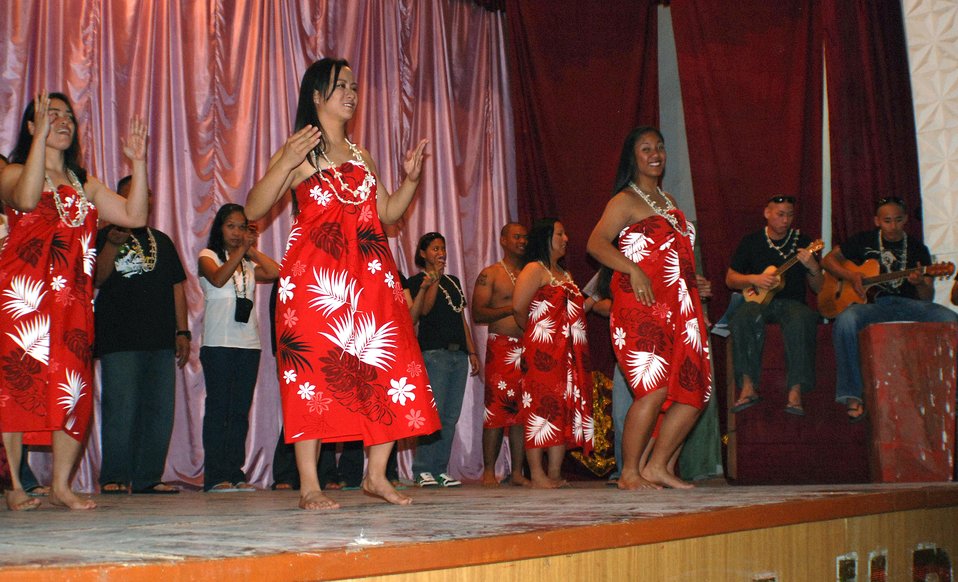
Deployment provides Airmen chance to make lasting relationships

Airmen from Manas Air Base, Kyrgyz Republic, share traditional Pacific Island songs and dances with a group of more than 100 Kyrgyz children during the Pacific Island Cultural Day of Sharing Aug. 20 in the village of Jeny Pahkta. Members of the 376th Air Expeditionary Force Support Squadron has sponsored the Kyrygz village for six years, donating clothes and painting and cleaning the local school.